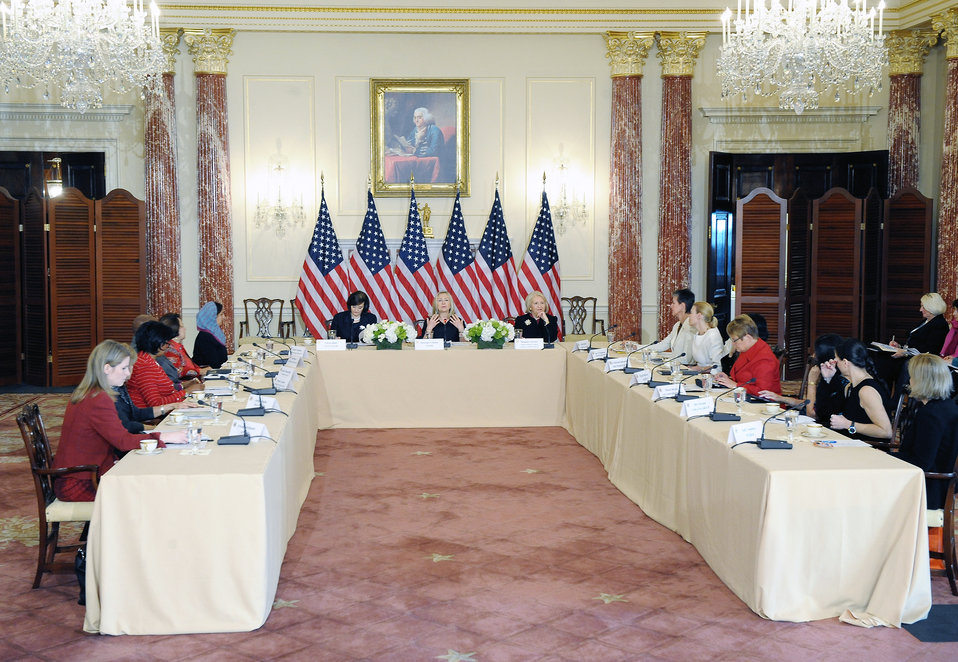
Secretary Clinton Hosts Inaugural Meeting of International Council on Women's Business Leadership

U.S. Secretary of State Hillary Rodham Clinton hosts the inaugural meeting of the International Council on Women's Business Leadership at the U.S. Department of State in Washington, D.C., on January 24, 2012.